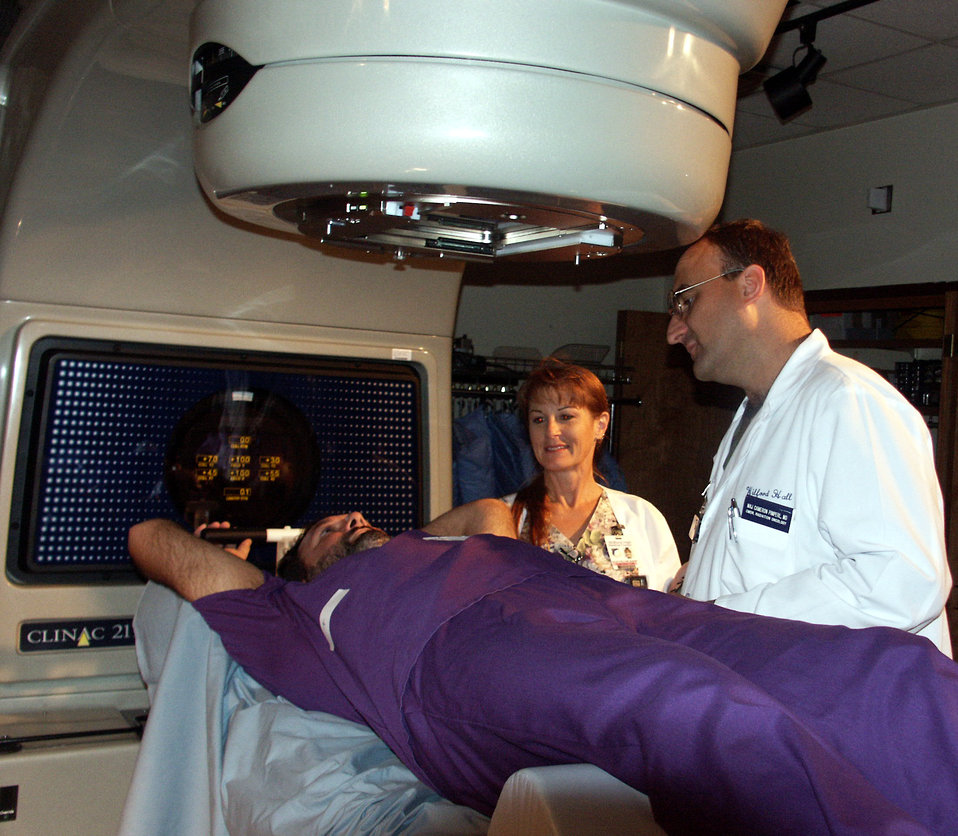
Radiation therapy

LACKLAND AIR FORCE BASE, Texas (AFPN) -- Maj. (Dr.) Cameron Pimperl (right) and radiation therapists Susan Haley and David Rivas demonstrate the department's new linear accelerator at Wilford Hall Medical Center. The Wilford Hall radiation oncology department specialists treat 25 to 30 patients a week. The new equipment allows providers to treat areas that were previously untreatable because of their close proximity to critical structures.